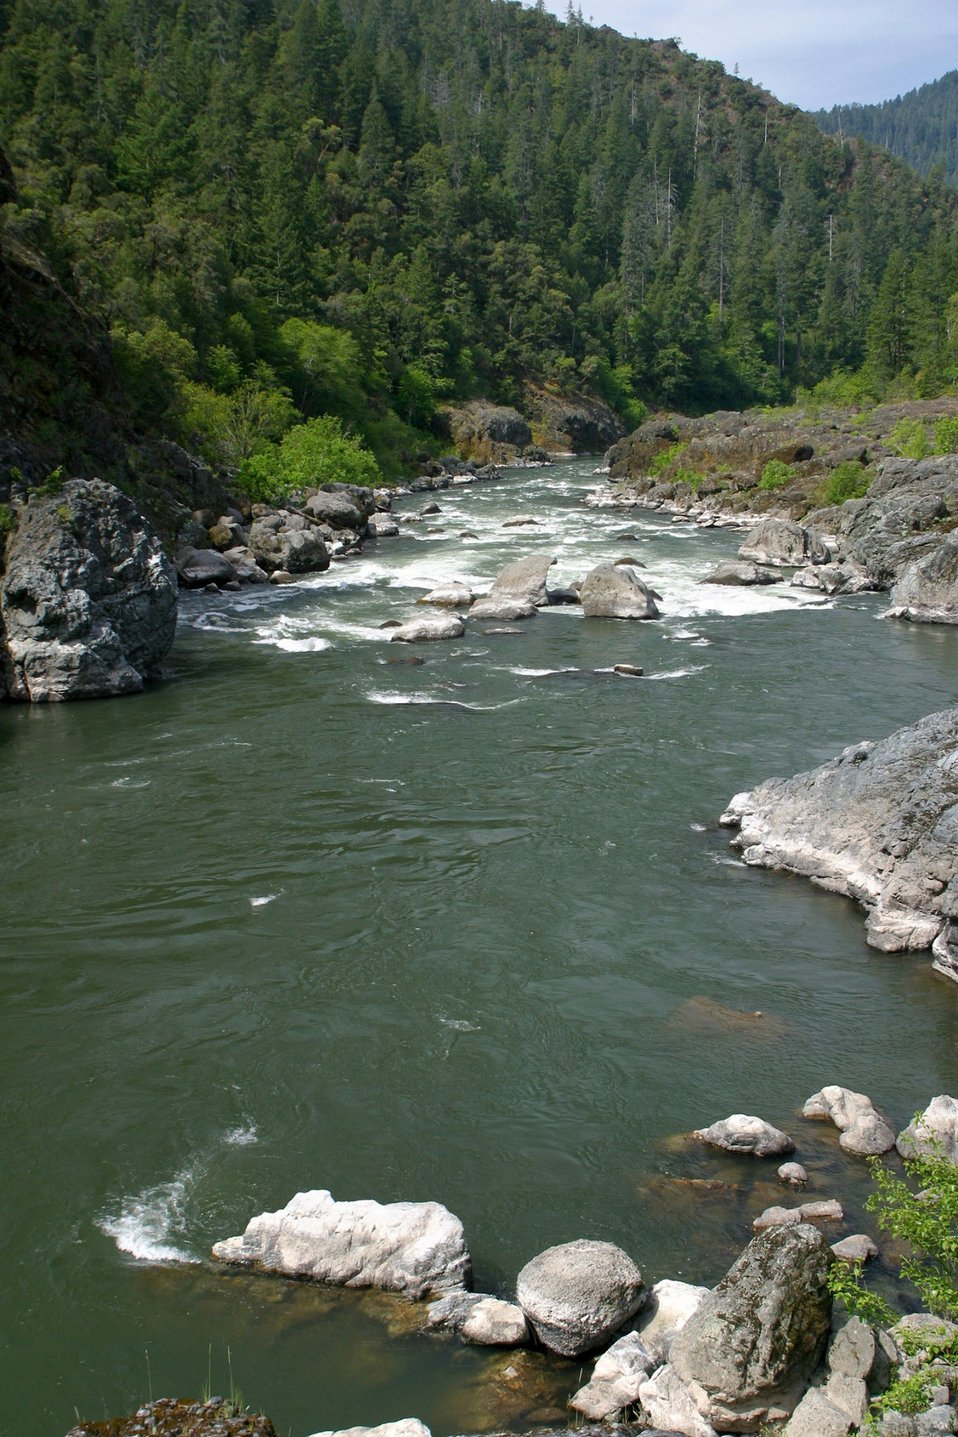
Wild section of the Rogue River from Grave Creek to Foster Bar May 19 to May 22.